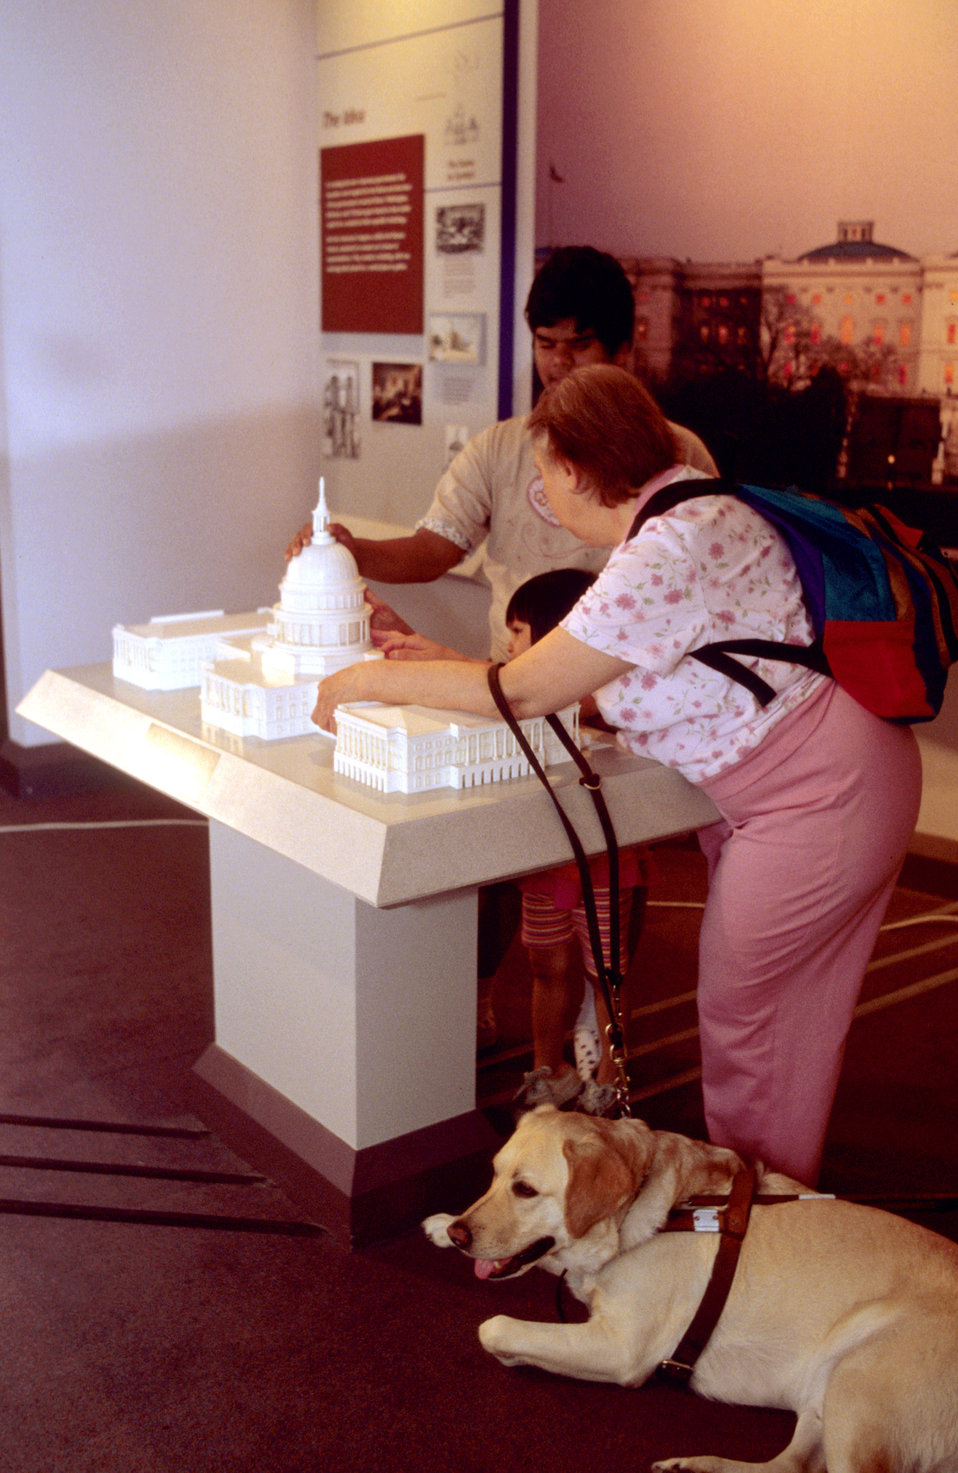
This was the fourth in a series of eight images (PHIL# 9088 - 9095) revealing the exhibits inside the U.S. National Building Museum, all of which could be touched by all visitors, including adults, children, and especially those who were mobility, or visually impaired. Consideration paid to those with such impairments during the designing of such a facility, enhanced the enjoyment experienced by all participants, as well as their overall learning experience. Mounted so that standing or seated users could fully appreciate their visit, the exhibits included Braille descriptions, large print signs. Here, a visually-impaired woman with her guide dog, and young man, were touching a replica of the U.S. Capitol Building. 'The Center for Universal Design (CUD) is a national research, information, and technical assistance center that evaluates, develops, and promotes accessible and universal design in housing, buildings, outdoor and urban settings and related products.'